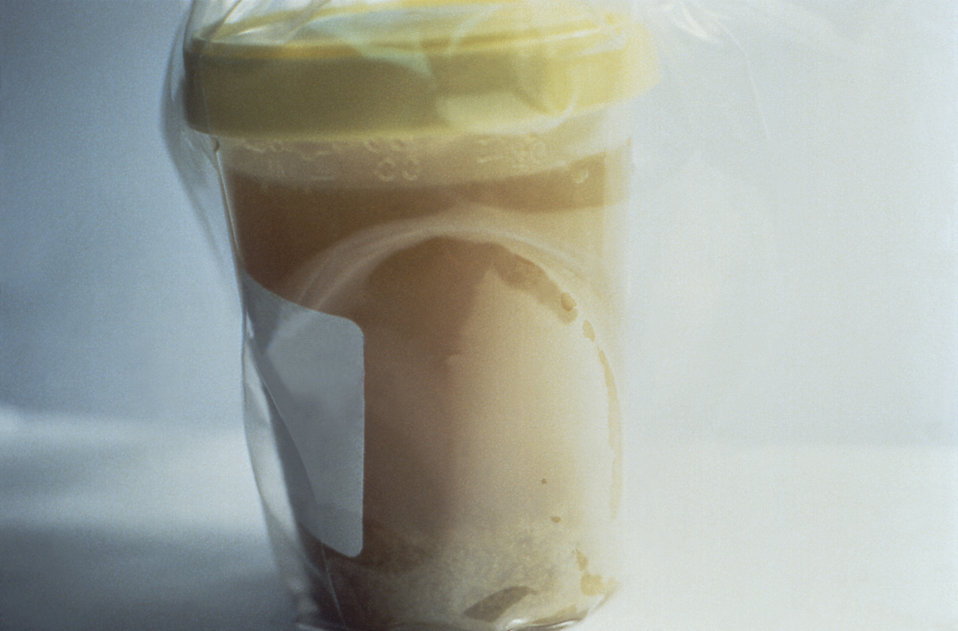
Here, a cup of typical "rice-water" stool from a cholera patient shows flecks of mucus that have settled to the bottom.